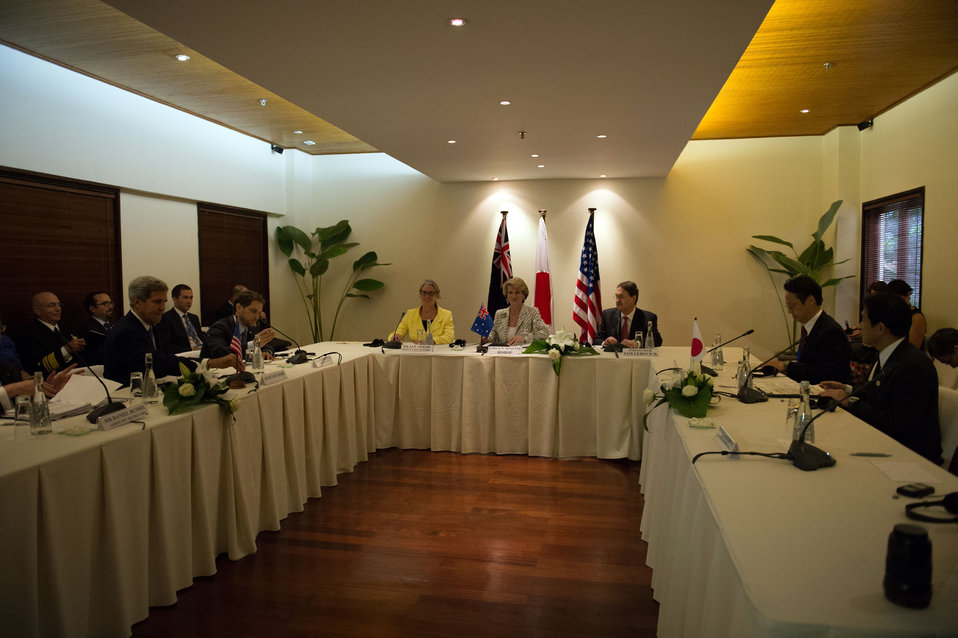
Secretary Kerry With Australian and Japanese Foreign Ministers Bishop and Kishida Before the Trilateral Security Dialogue

U.S. Secretary of State John Kerry poses with Australian Foreign Minister Julie Bishop, and Japanese Foreign Minister Fumio Kishida before the Trilateral Security Dialogue in Bali, Indonesia, on October 4, 2013.